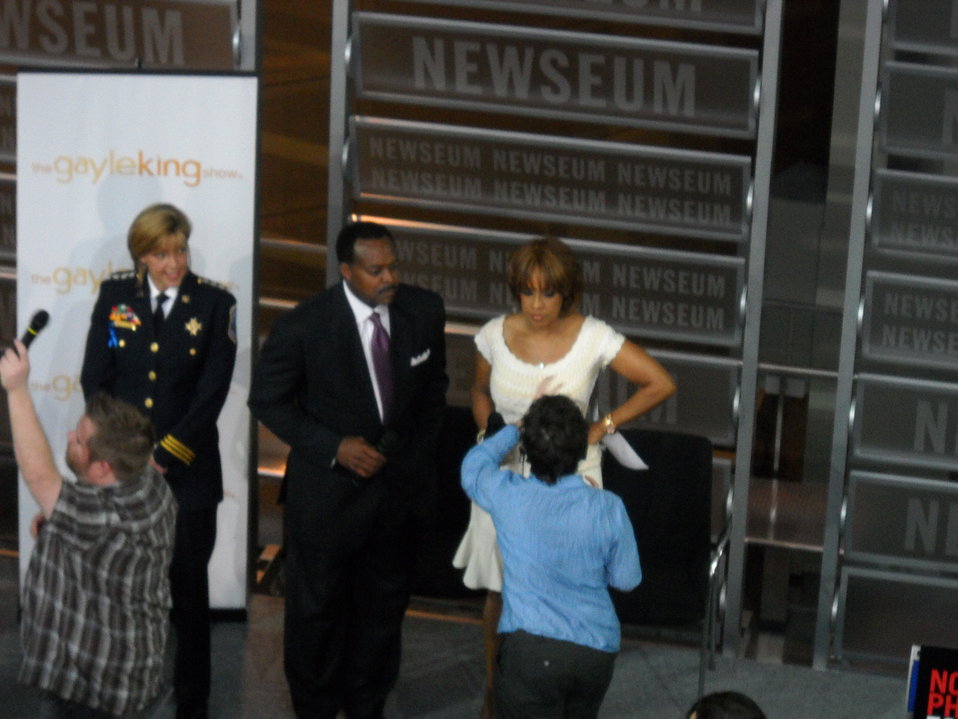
National No Phone Zone Day Newsum Washington, DC April 30, 2010 042